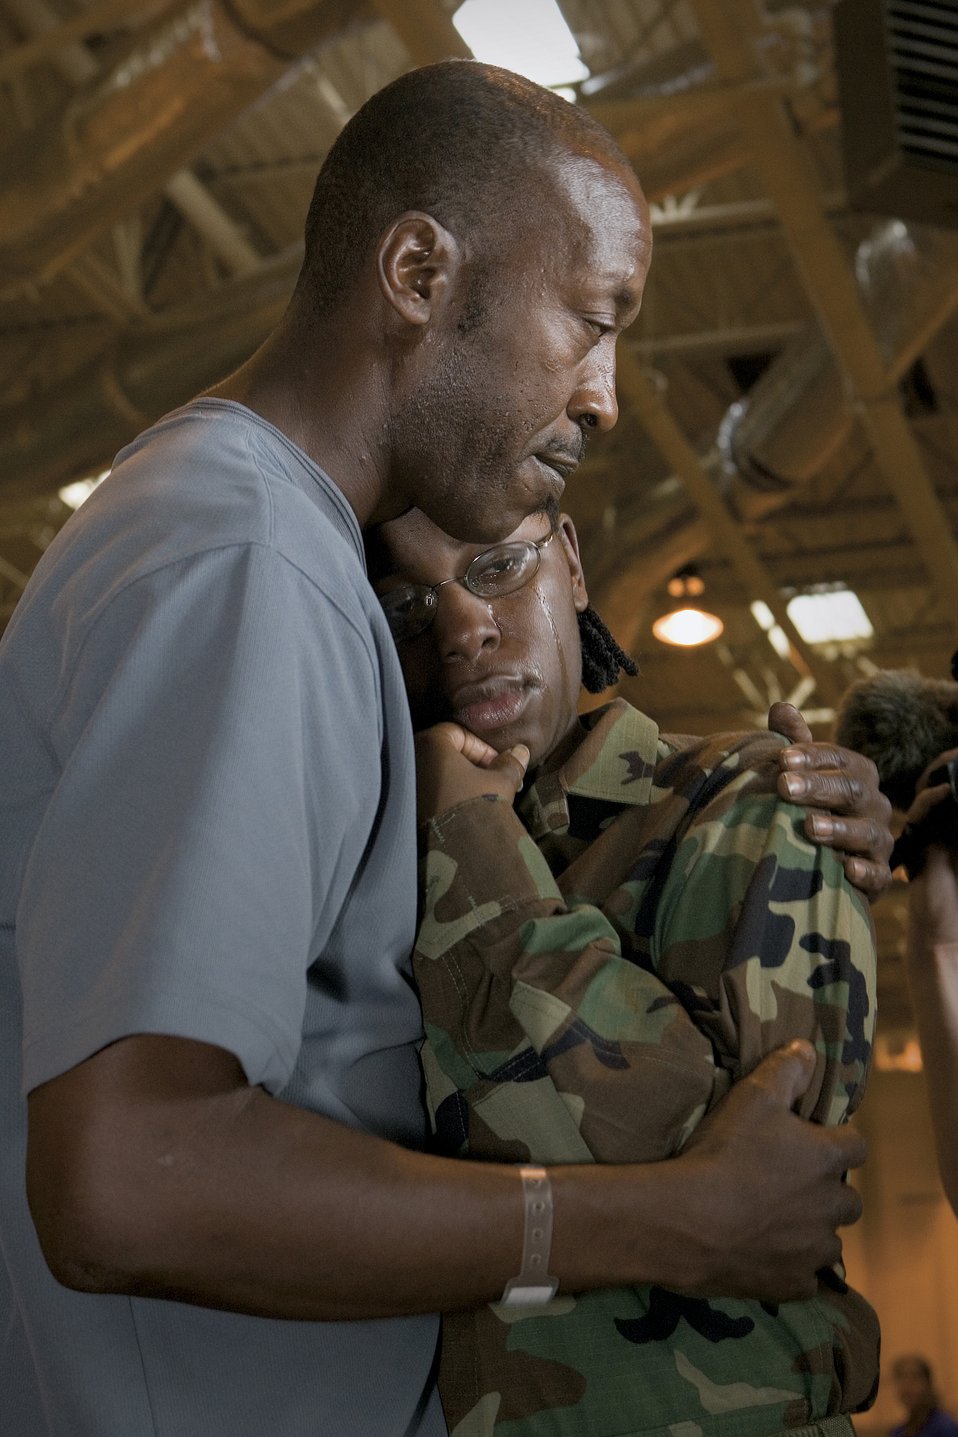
Reunited

SAN ANTONIO -- One week after Hurricane Katrina hit the Gulf Coast, Airman Basic Tylar Pittman reunites with her father, Timothy Pittman. Mr. Pittman was evacuated to San Antonio from New Orleans after the hurricane rendered him homeless. The emotional reunion was the first time the two had seen each other in three years.